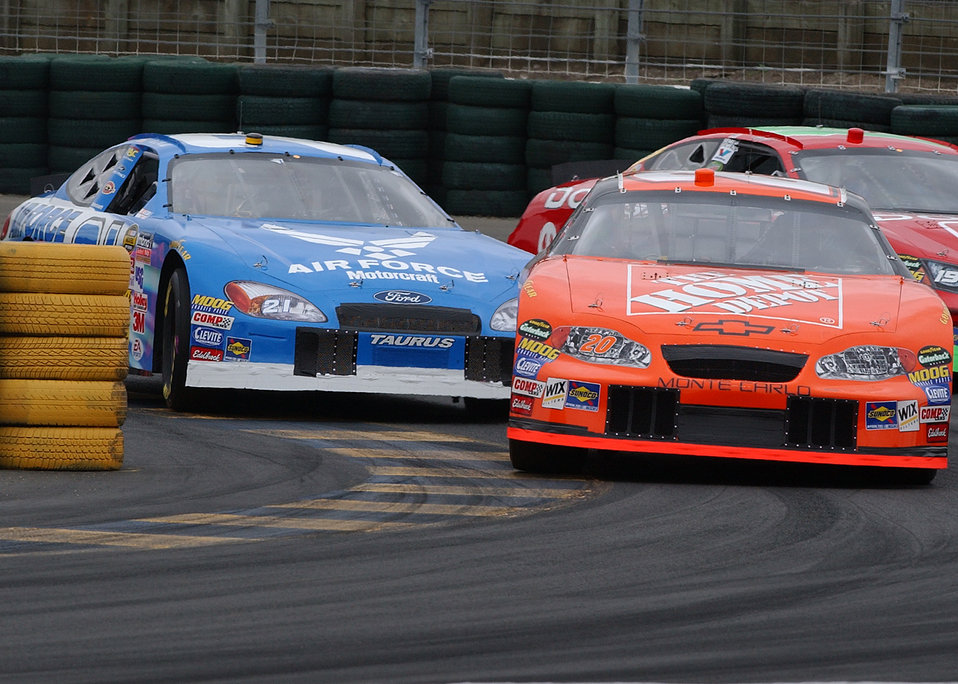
A close second

SONOMA, Calif. -- Ricky Rudd, driver of the Air Force's No. 21, battles Tony Stewart in the Dodge/Save Mart 350 at Infineon Raceway here June 26. Rudd finished second to Stewart, marking the highest finish of the season for the Air Force car.